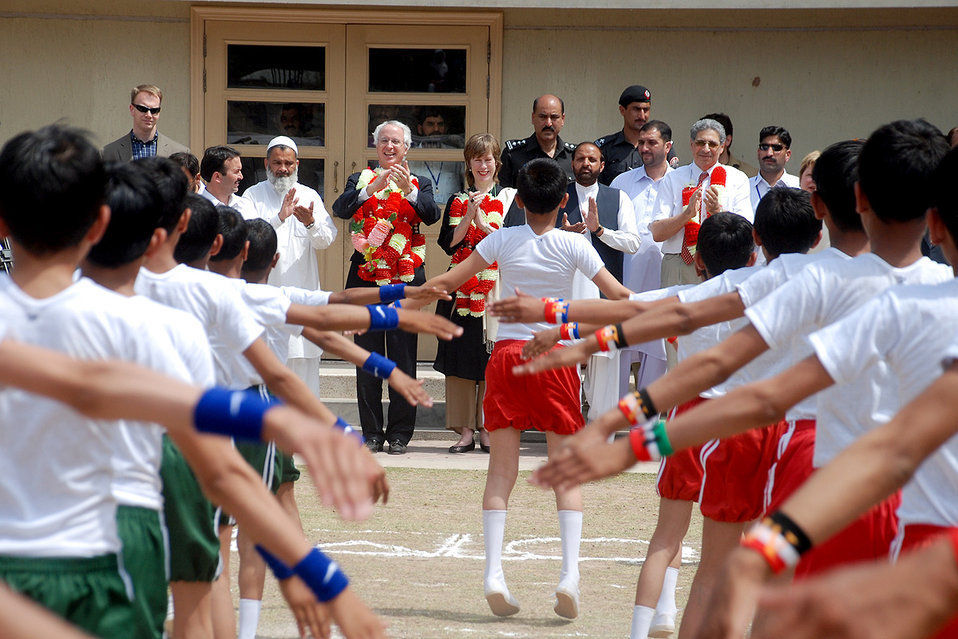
Envoy Highlights U.S. Development

SAID has built two schools in the Arja community – the Girls College and the Government Boys High School.